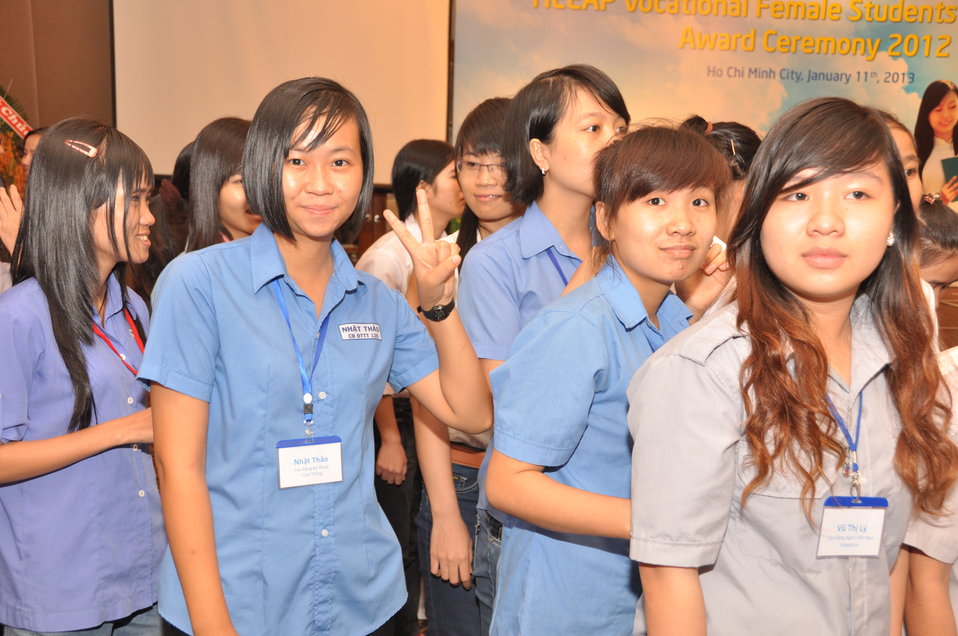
Female Vocational Student Scholarship Ceremony

January 11, 2013, Ho Chi Minh City